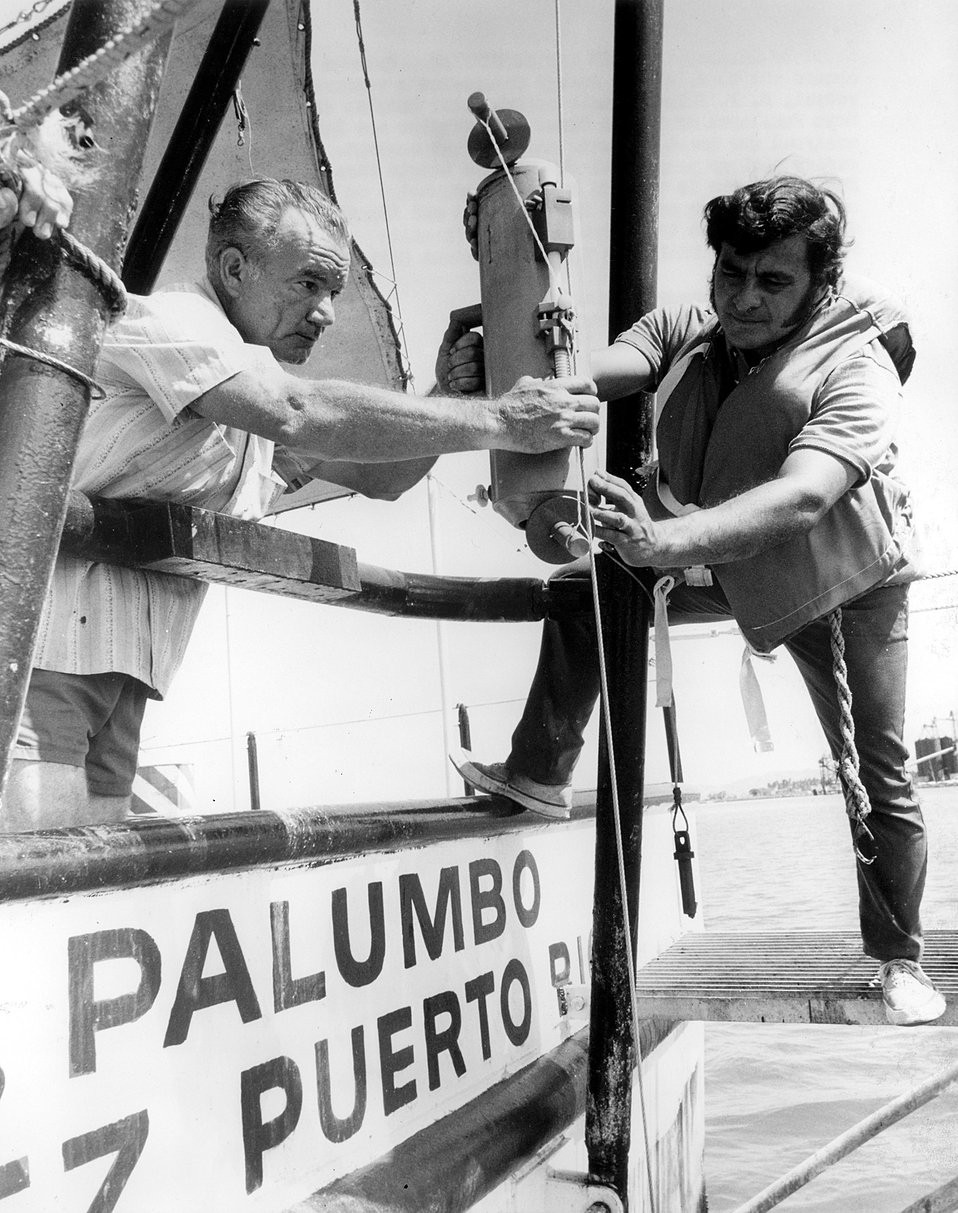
Crewmen aboard the U.S. Atomic Energy Commission's research vessel, R.F. Palumbo, take marine water samples in the Mona Pass area of Puerto Rico. Circa 1972.